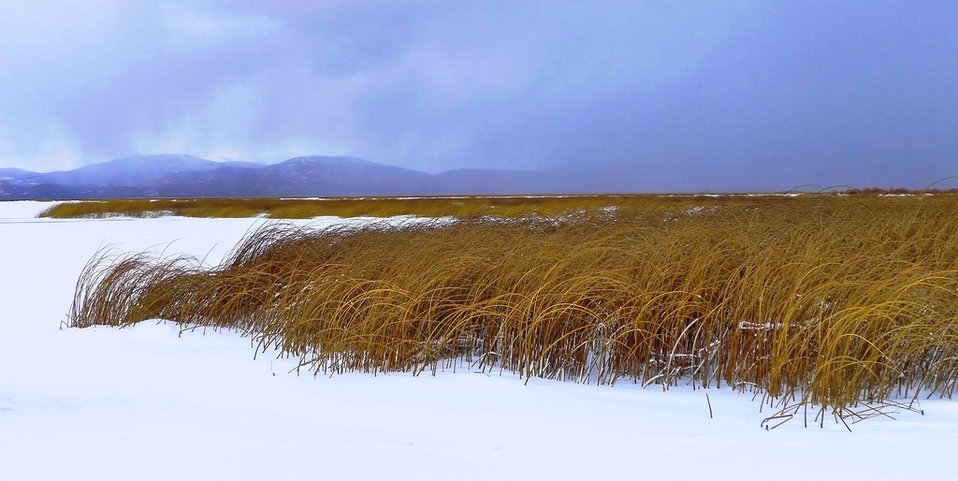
a snow squall approaches

Red Rock Lakes National Wildlife Refuge, MT